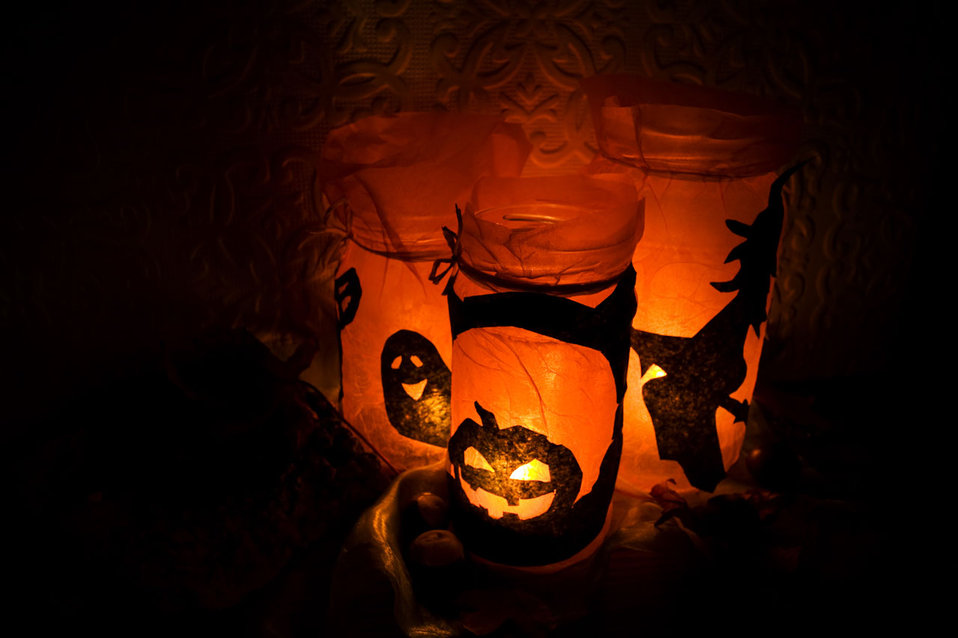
Halloween lights

Lights with halloween theme.